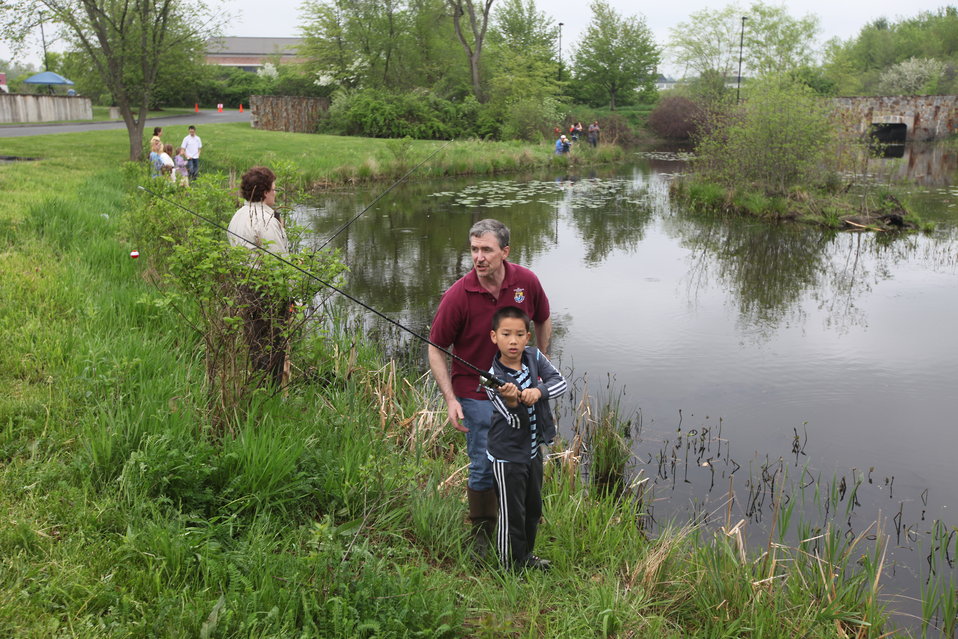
Fishing Derby